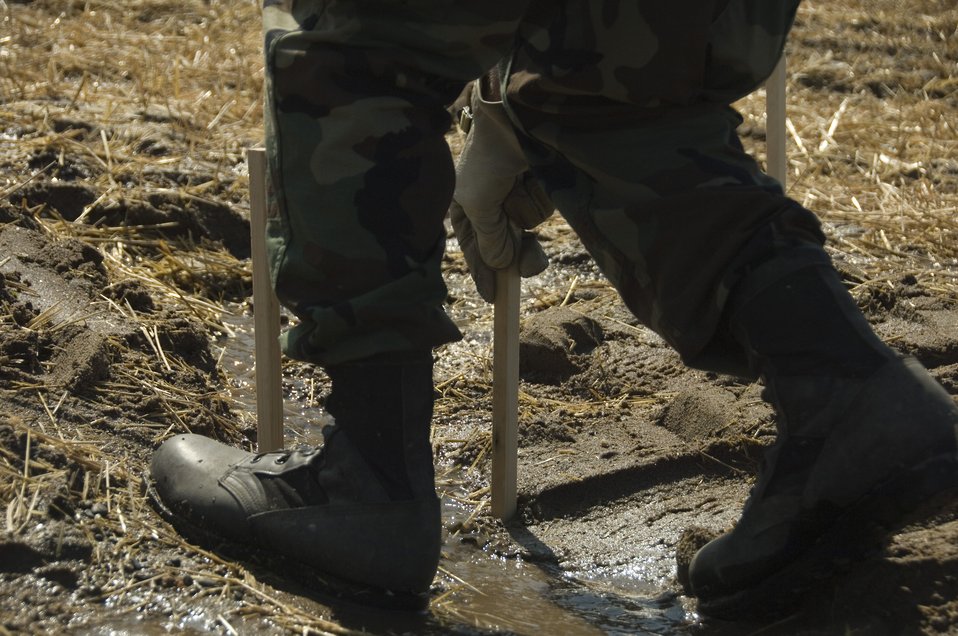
Air Guard prevents erosion

Wooden stakes are placed in the ground Jun 18 to help hold hay in place in areas where erosion is occurring on a levee near Burlington, Iowa . Approximately 14,000 acres of farmland is in danger of flooding if the erosion is not controlled.